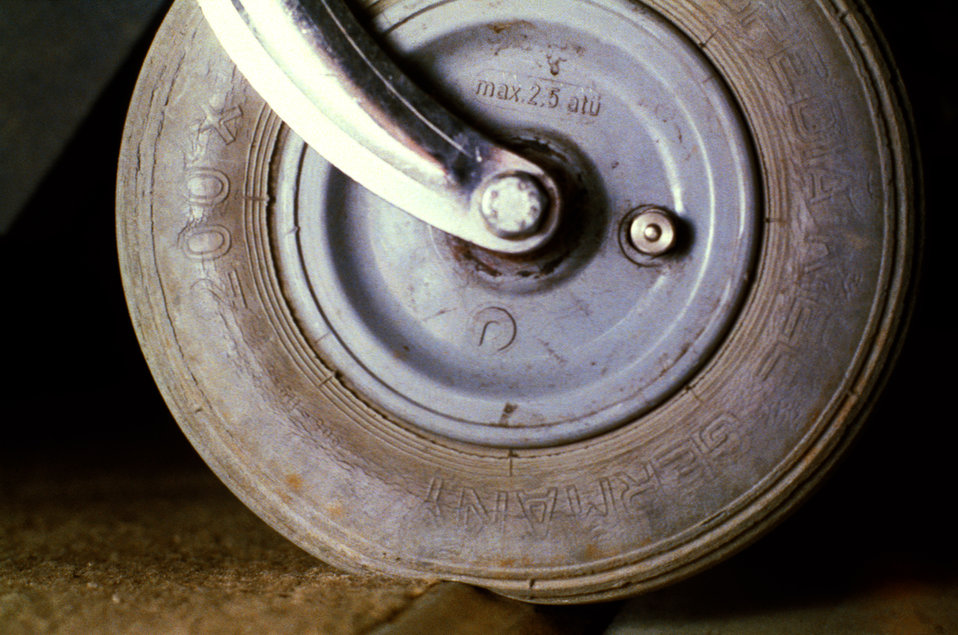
This 1997 image was one of three (see PHIL 9263 - 9265) photographs, the theme of which focused on the areas of a residential environment where one would encounter transitional changes on floor surface levels. When floor designs implement a minimization in floor height at transition points, unimpeded travel is facilitated for those using wheelchairs, or experience abulatory difficulties. In this particular image, a close-up perspective of the rubbery, inflateable wheel of a wheelchair, revealed how easily the wheel navigated the transitional point between a carpeted versus tiled floor surface.